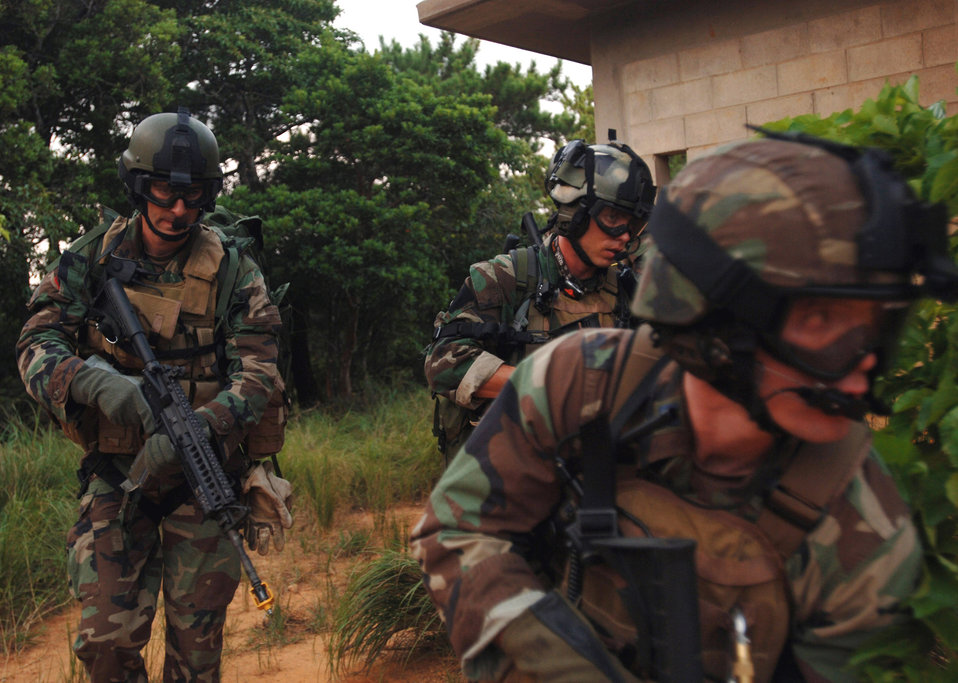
Evacuation

KADENA AIR BASE, Japan -- Senior Airman Sean Cole, Tech. Sgt. Brandon Casteel and Capt. Charles Bris-Bois search for workers during a non-combatant evacuation operation during Joint Air and Sea Exercise 2005. They are all pararescuemen with the 31st Rescue Squadron.